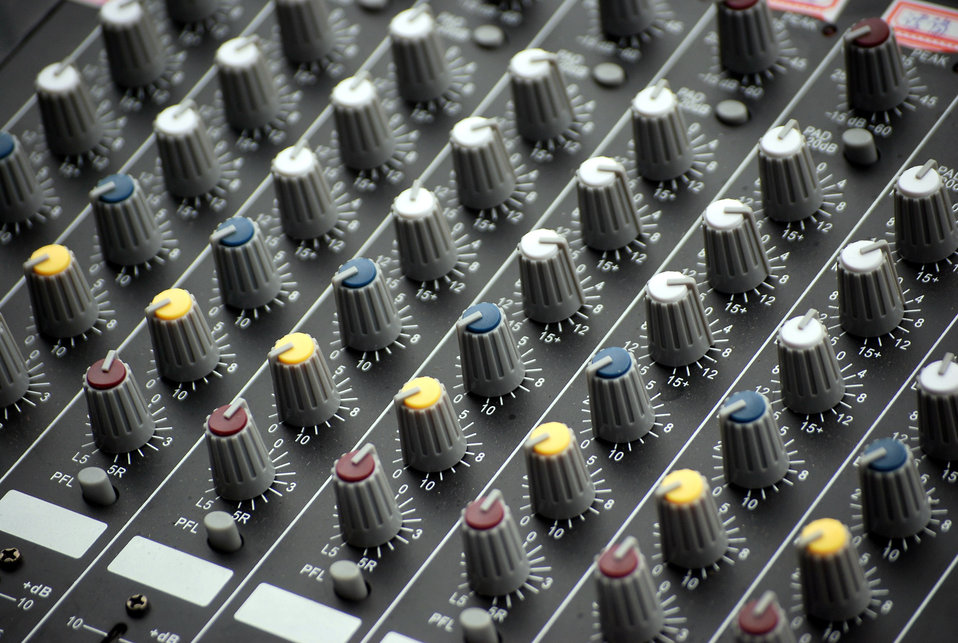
Audio amplifier gain controls

Gain controls for an audio amplifier.